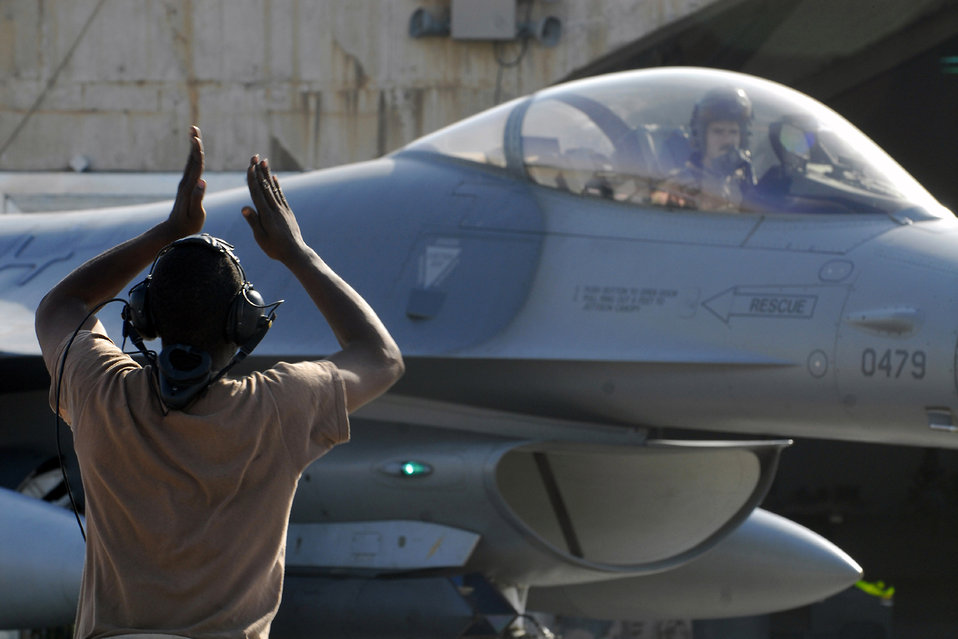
Oct. 29 airpower summary

Airman 1st Class Martin Johnson, 332nd Expeditionary Aircraft Maintenance Squadron crew chief, marshals Capt. Thomas Graham, 4th Expeditionary Fighter Squadron, to the flightline at Balad Air Base. Graham and Johnson are deployed from Hill Air Force Base, Utah.